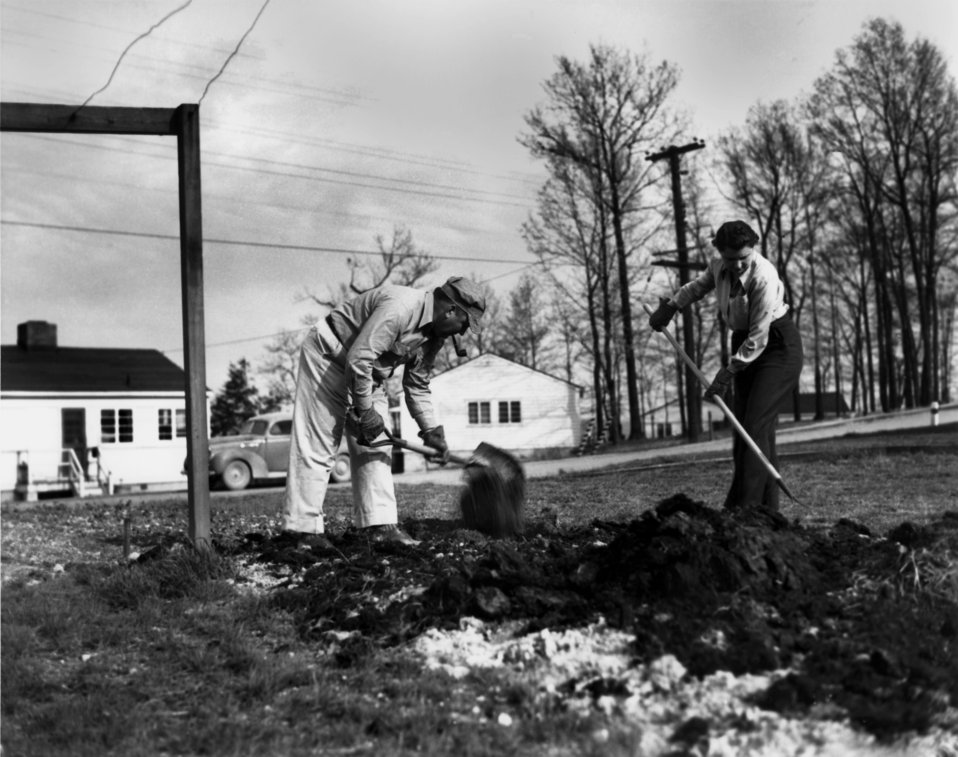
Victory Garden Oak Ridge

pro 377-2 DOE photo Ed Westcott 1945
Oak Ridge Tennessee